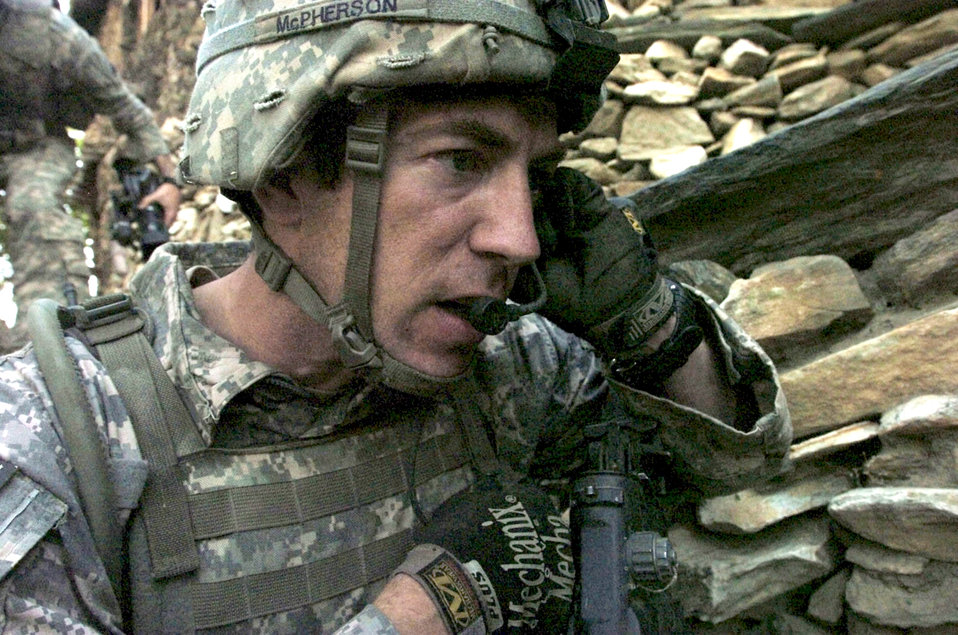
Gunfight and Airstrike in Korengal Valley

Tech. Sgt. Joel McPherson, a joint terminal attack controller, calls in an airstrike Aug. 13 on insurgent positions in the steep hills of Korengal Valley in Afghanistan's Kunar Province. After a 20-minute gun battle, F-15E Strikes Eagles arrived and destroyed the enemy positions. Sergeant McPherson is attached to Company B, 2nd Battalion, 12th Infantry Regiment, 4th Brigade Combat Team, 4th Infantry Division, based at Fort Carson, Colo. International Security Assistance Force troops across Afghanistan have increased operations in recent months, in order to ensure safety and security during Afghanistan's second national election, scheduled for the end of August.